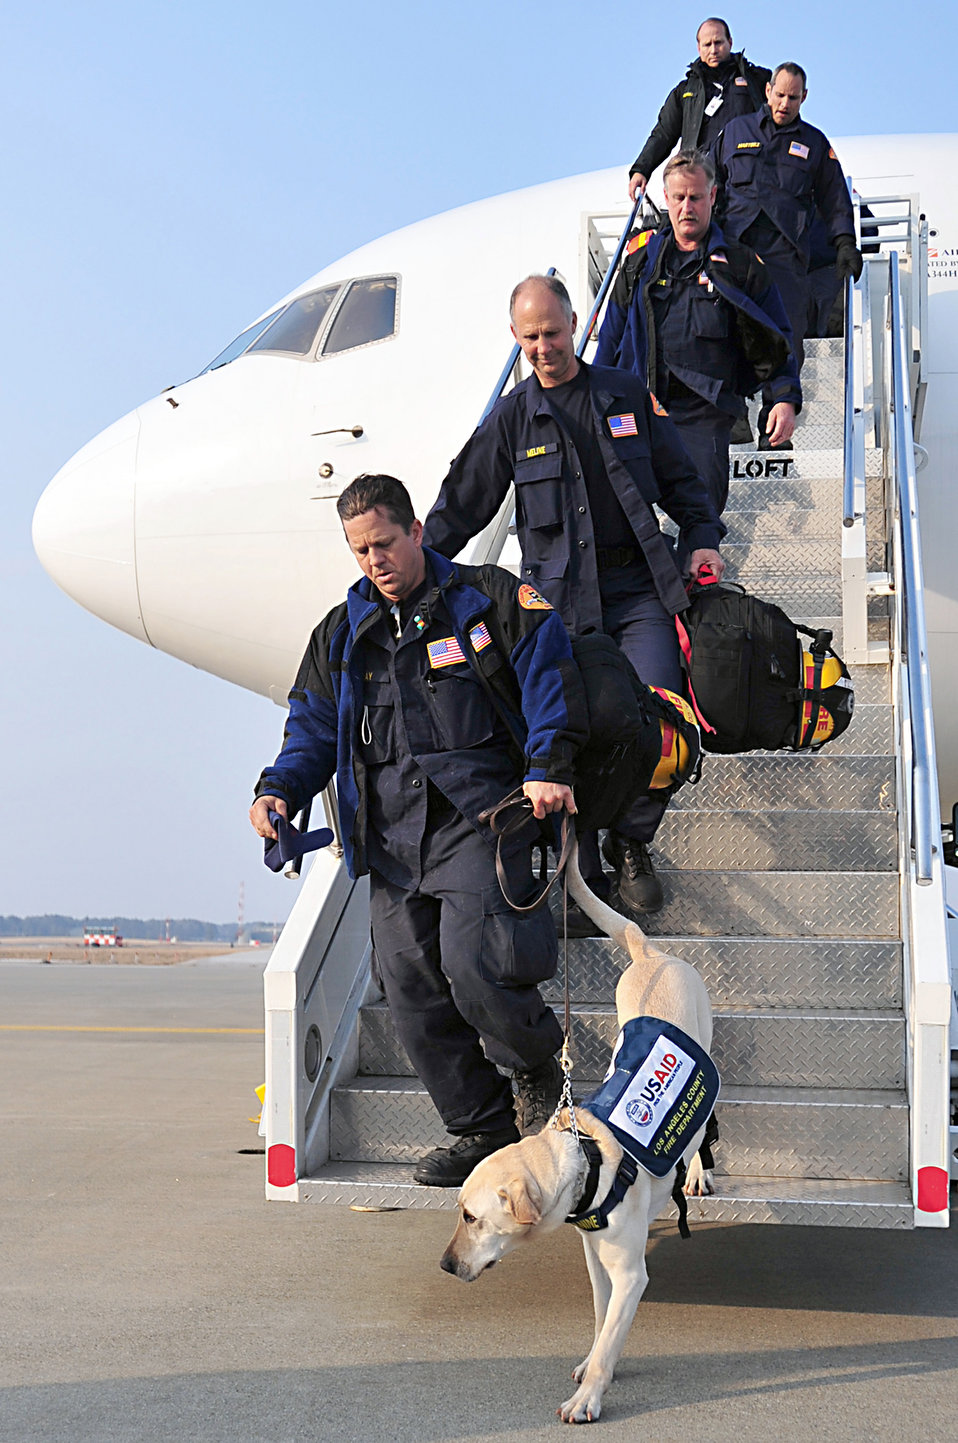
Search and rescue dogs

United States Agency for International Development search and rescue dogs along with their handlers arrived at Misawa Air Base, Japan Mar. 13, 2011. Teams arrived to help with civil relief and rescue operations after a 9.1 magnitude earthquake hit 100 miles off the coast of northern Japan Mar. 11.